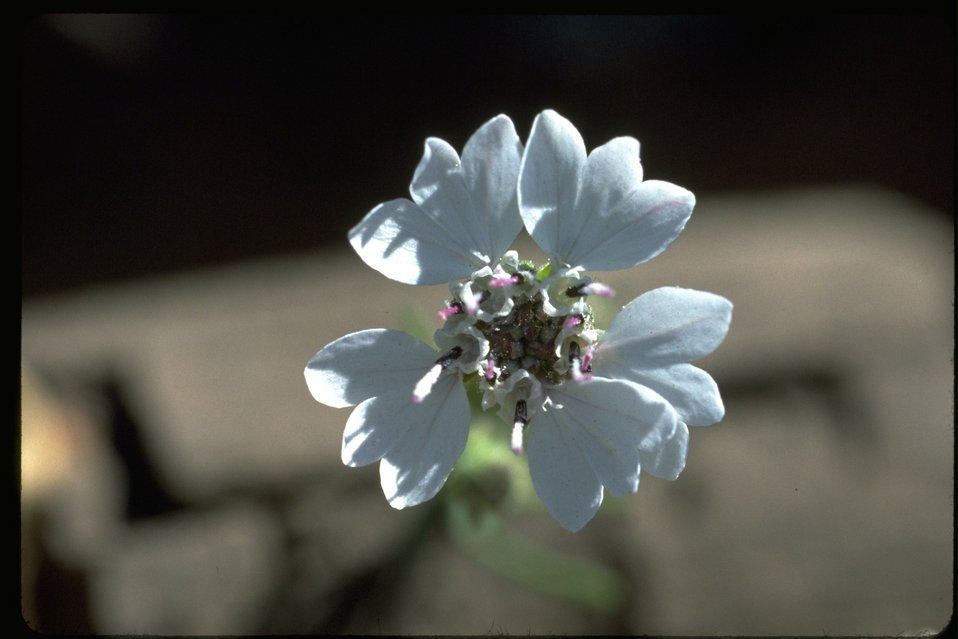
Close up shot of wild onion.